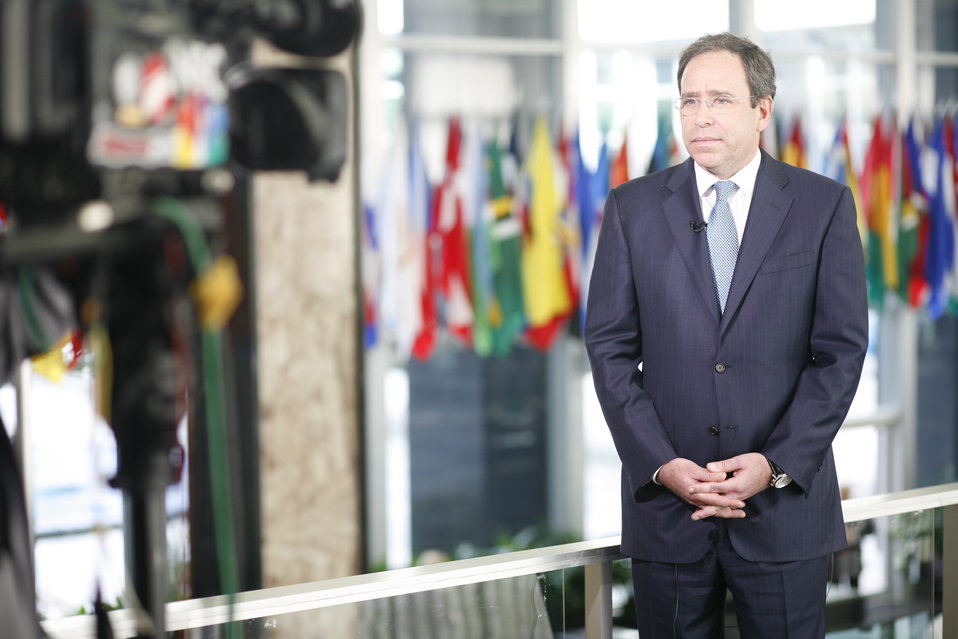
Deputy Secretary Nides Participates in an Interview

Deputy Secretary of State Thomas Nides participates in an interview at the first-ever State Department Global Business Conference at the U.S. Department of State in Washington, D.C., on February 21, 2012.